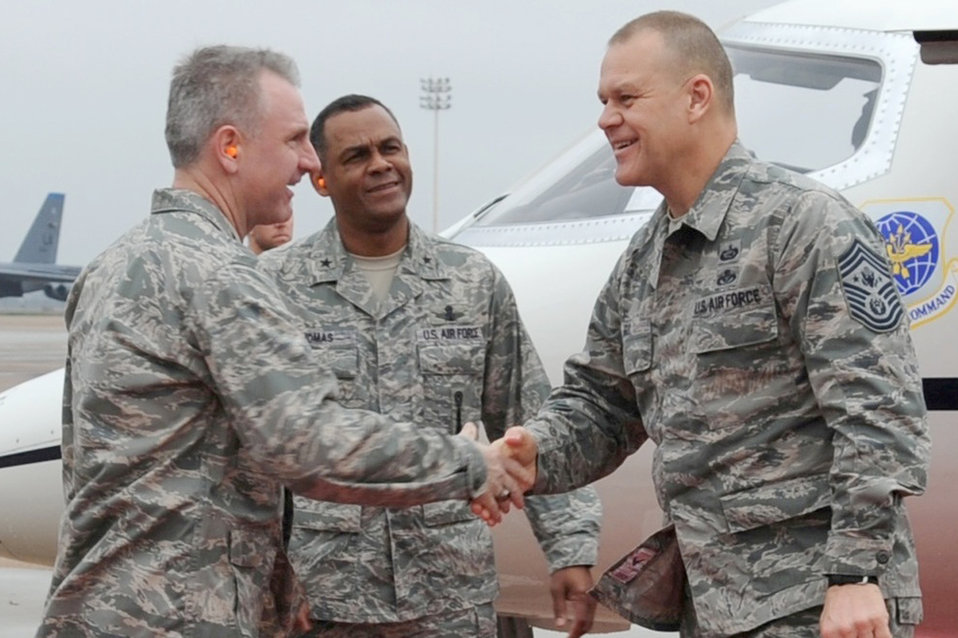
Chief Roy: Global Strike is a mission we can't forget

Col. Tim Fay with Brig. Gen. Everett Thomas greets Chief Master Sgt. of the Air Force James A. Roy upon his arrival to Barksdale Air Force Base, La., March 8, 2011. Colonel Fay is the the 2nd Bomb Wing commander. General Thomas is the Air Force Global Strike Command vice commander.